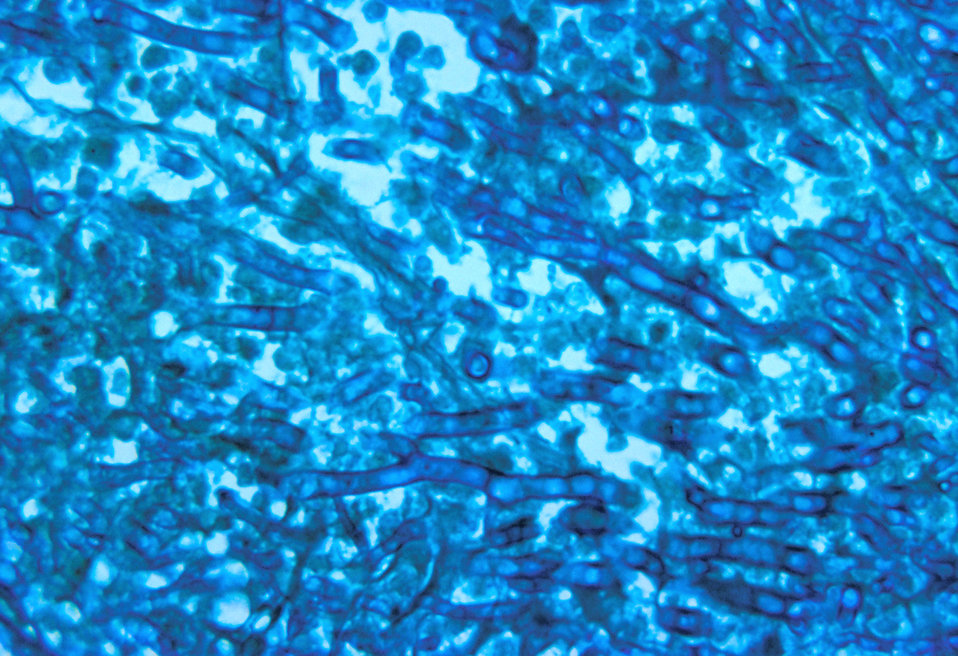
Note the histopathologic changes seen in aspergillosis of the lung of a caged parrot using PAS stain, which shows fungal hyphae.